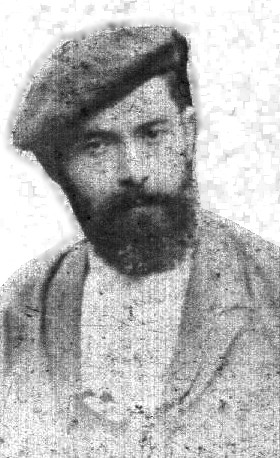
Sabino Arana Goiri con boina.Sabino Arana